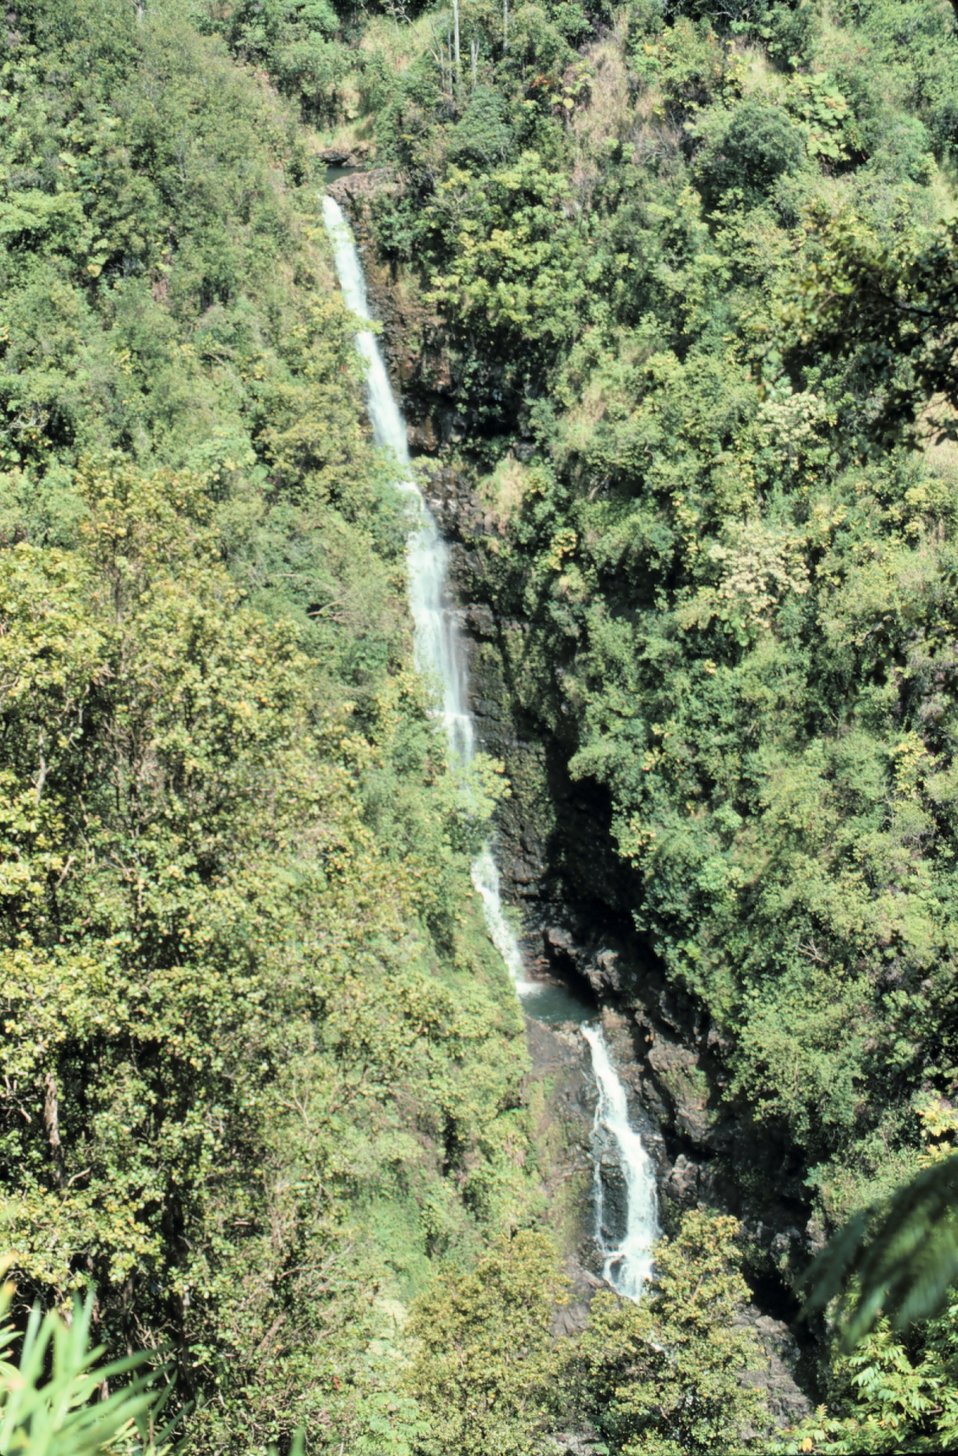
Akaka Falls